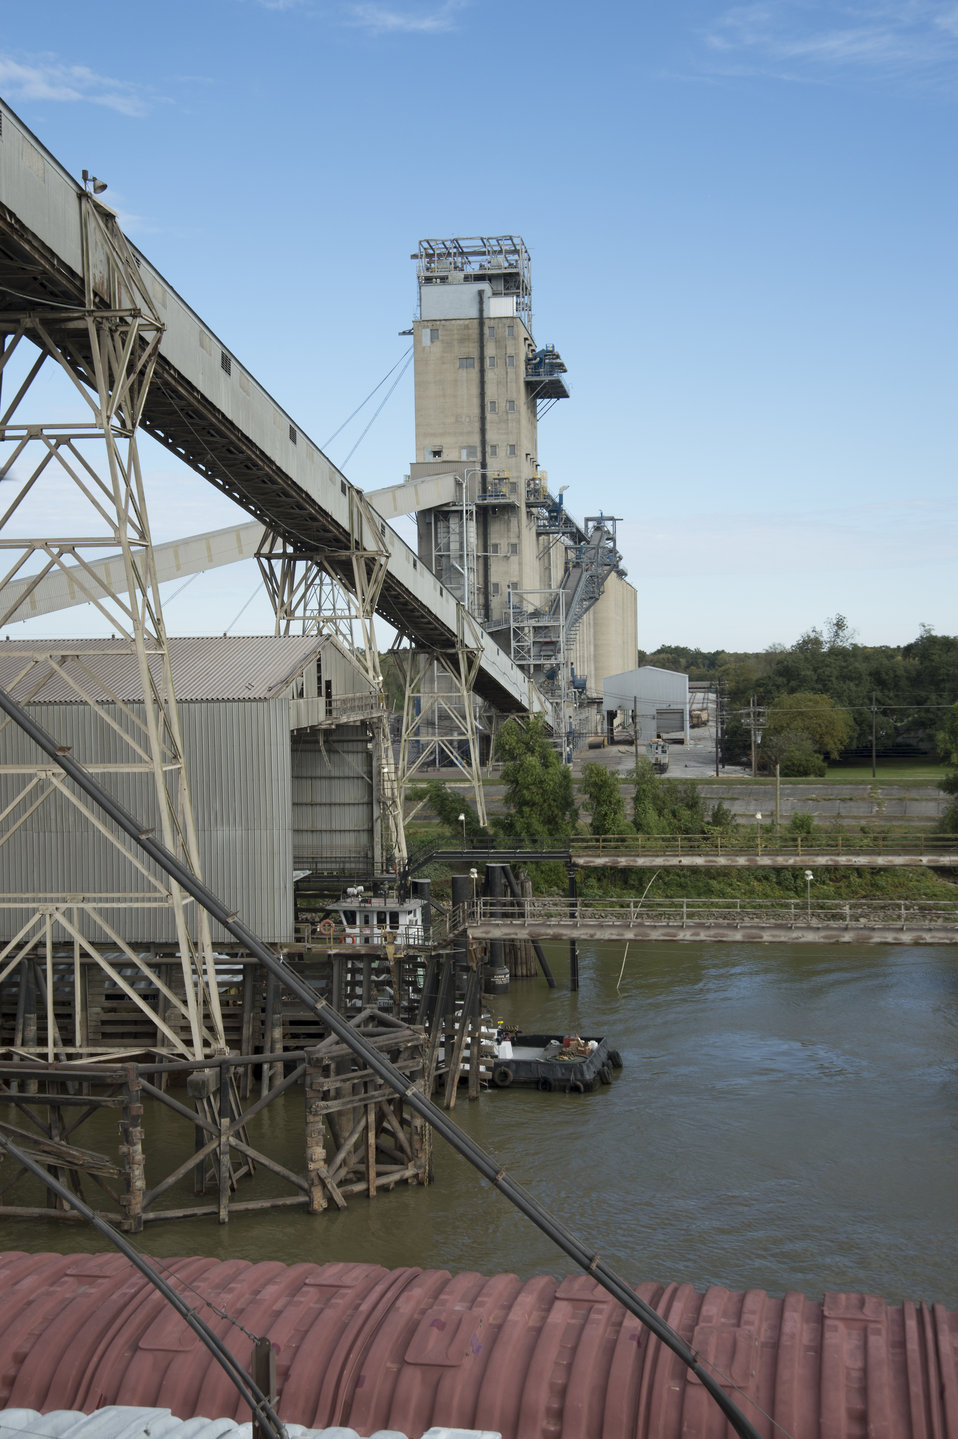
Grain is transferred from barges to storage facilities near the Port of New Orleans in New Orleans, LA on Tuesday, Nov. 19, 2013.